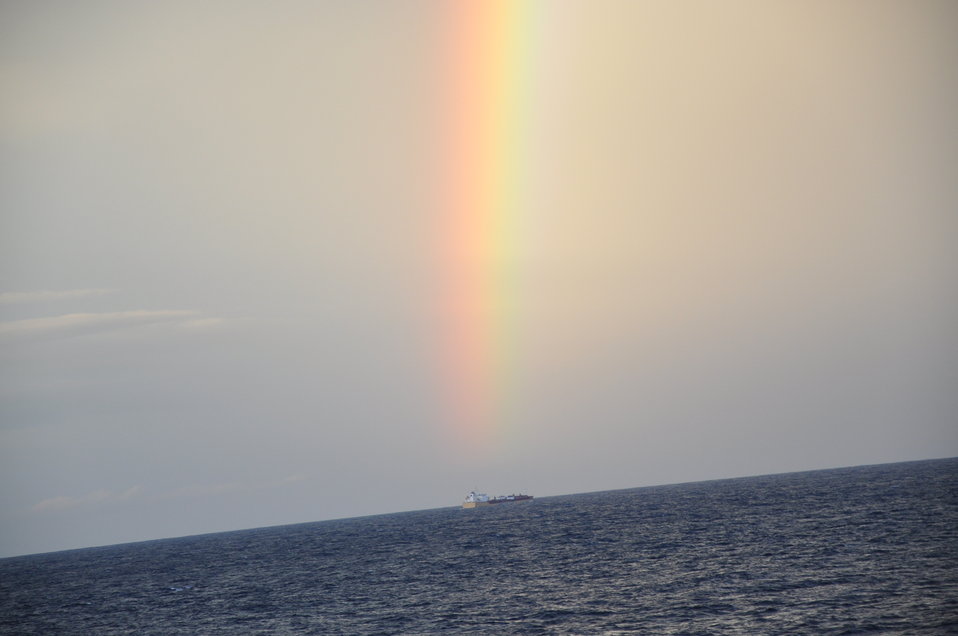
Rainbow over a small cargo ship